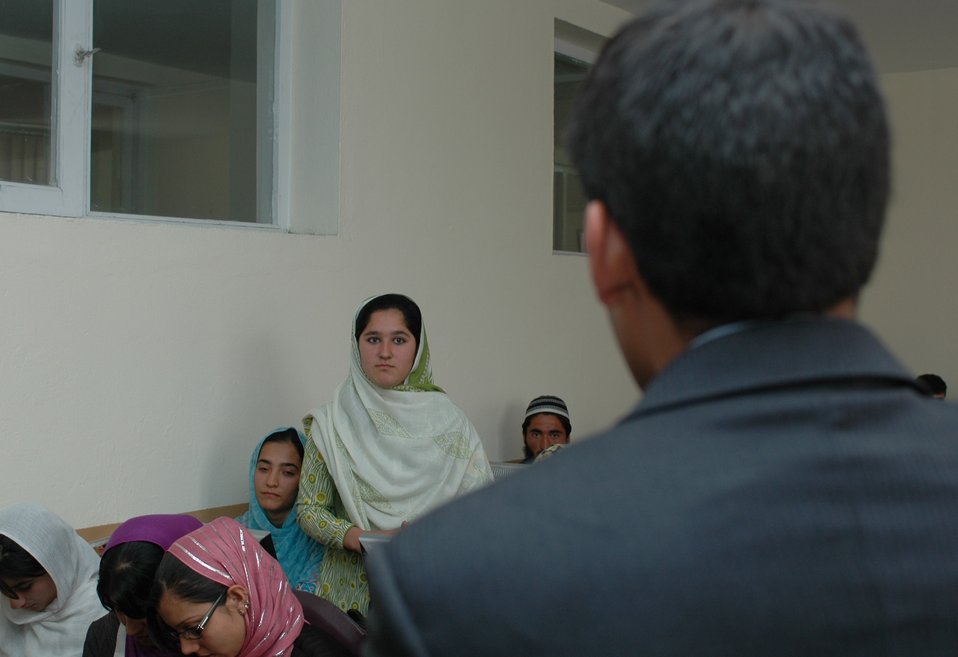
Dr Shah Visits Votech in Kabul